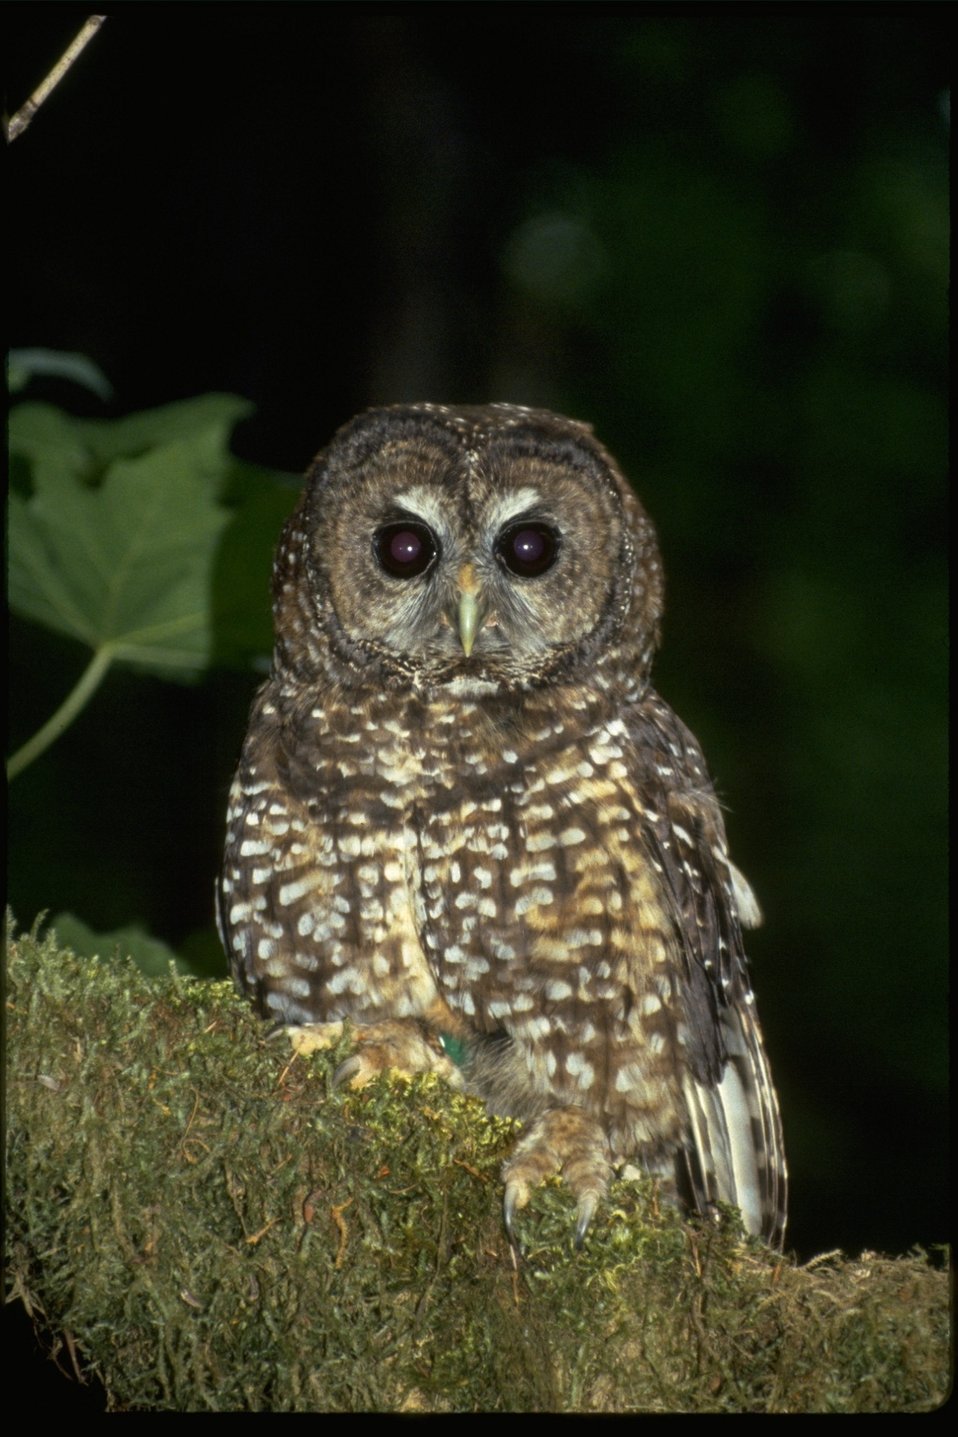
Spotted Owl.